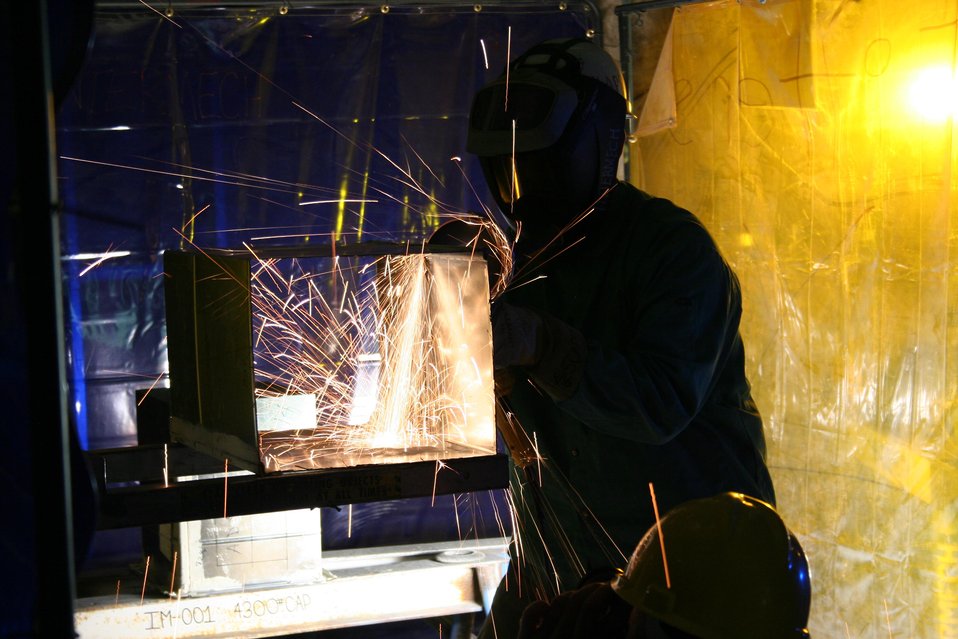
A Waste Treatment Plant employee cuts a piece of duct in the Analytical Laboratory